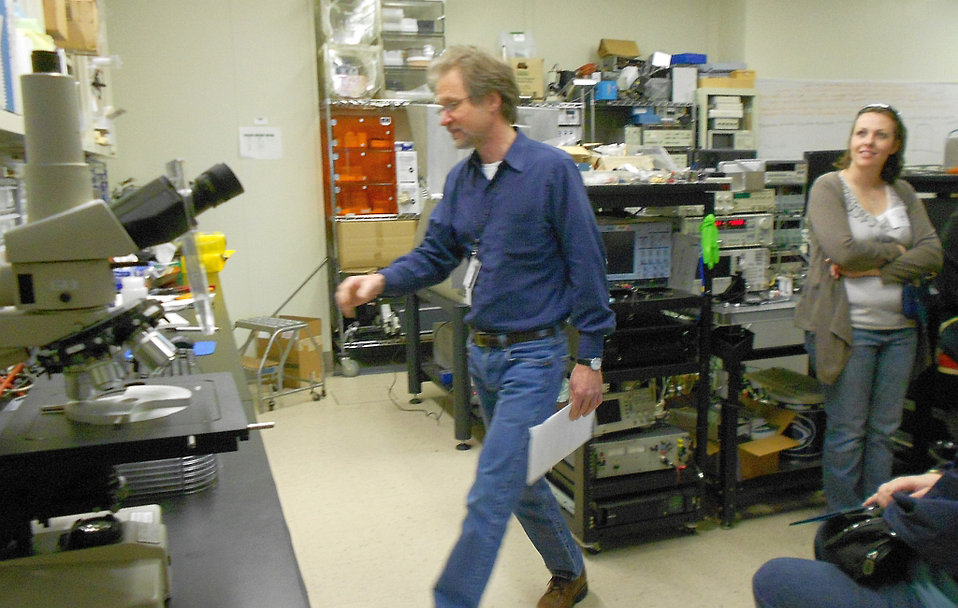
Rochester Community and Technical College Tour

John Suehle (left) of NIST’s Physical Measurement Laboratory’s Semiconductor and Dimensional Metrology Division explains to students and faculty from Rochester Community and Technical College in Rochester, MN that size of microelectronic devices is rapidly approaching the nanoscale regime. Devices used in the future generations of microprocessors will only be 20 times larger than a DNA molecule.